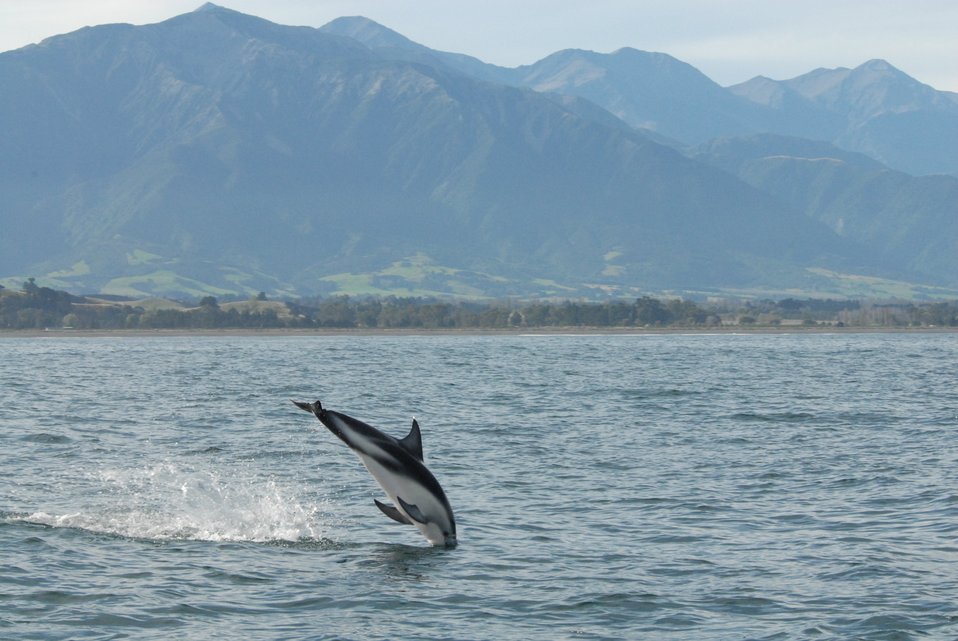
Dusky dolphin (Lagenorhynchus obscurus)